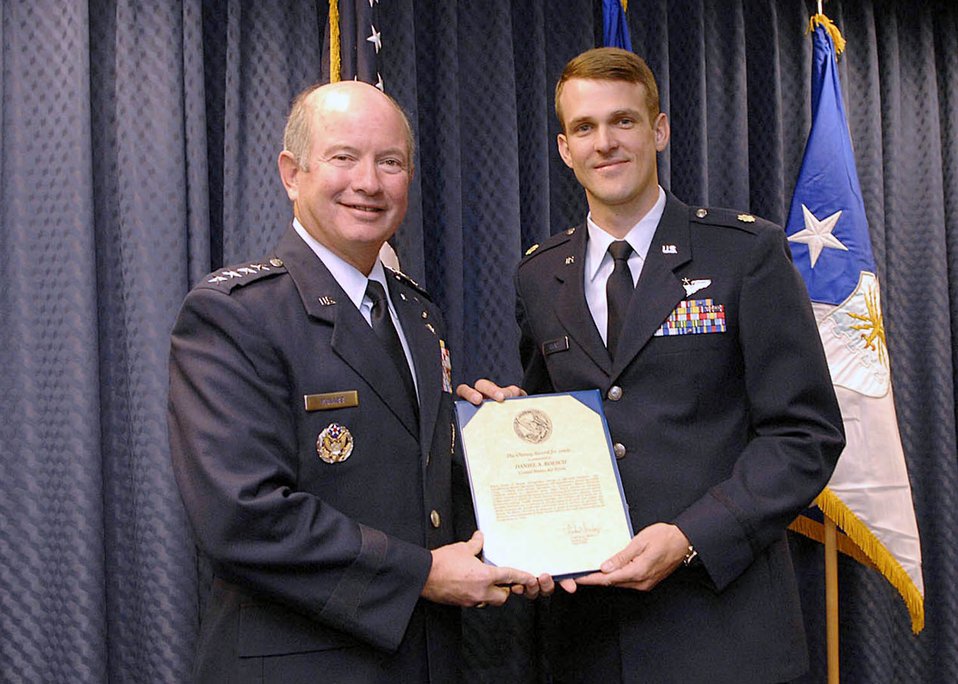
Air Force officers earn Cheney Award

Air Force Vice Chief of Staff Gen. Duncan J. McNabb presents Maj. Daniel Roesch the Cheney Award for actions in southern Afghanistan. The Cheney Award is presented each year in memory of 1st Lt. William Cheney, who was killed in an air collision over Italy in 1918. Major Roesch is an MC-130H Combat Talon II navigator.